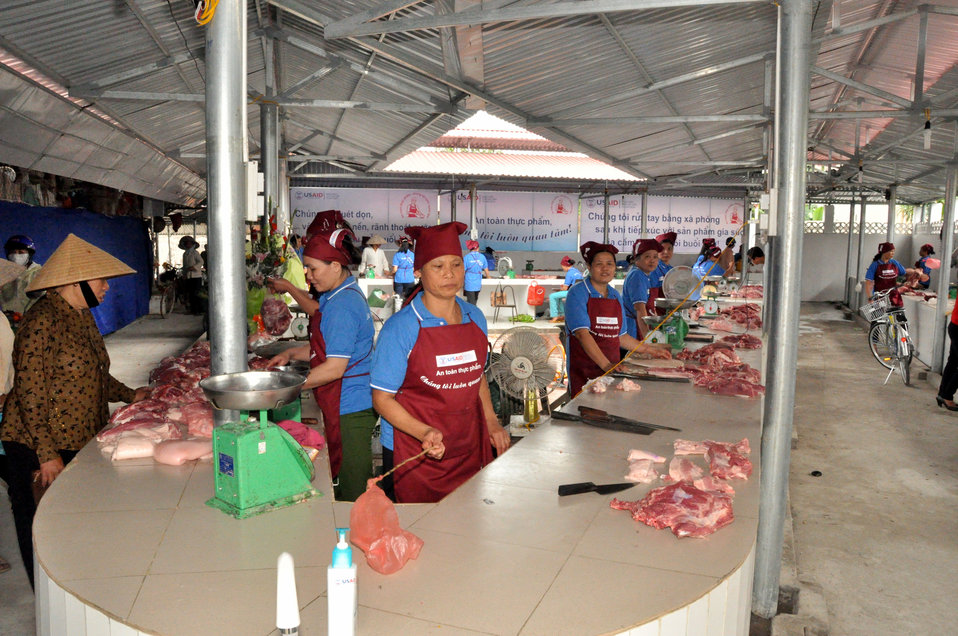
Handover Ceremony Hoa Mac Market Ha Nam

October 26, 2012